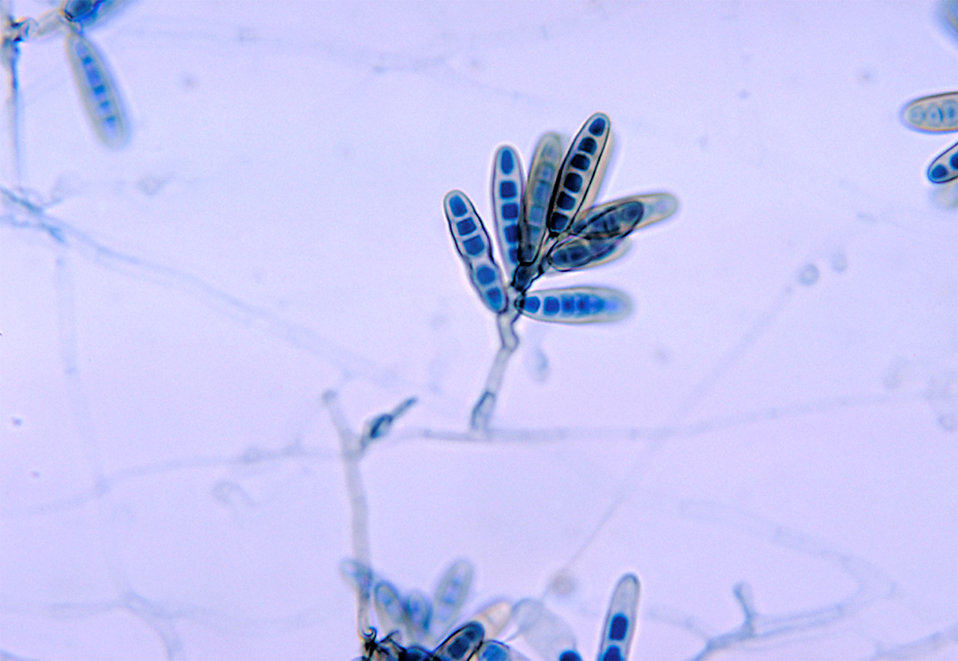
This micrograph reveals a conidia-laden conidiophore of the fungus Bipolaris hawaiiensis.